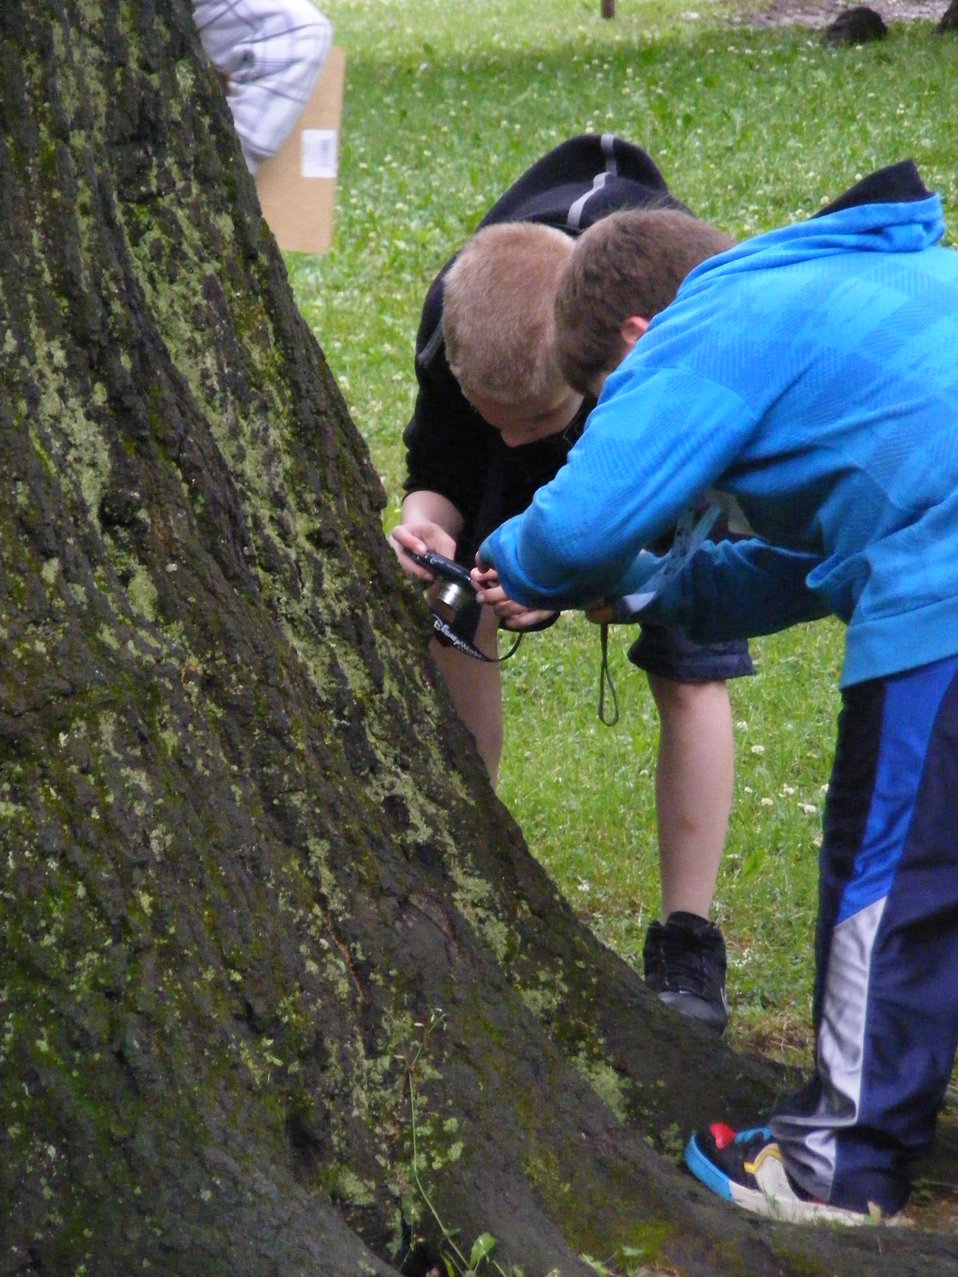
Close-ups of moss

Credit: Michael Goehle/ USFWS

Two boys crouch down to get a good look at some moss growing on a tree.